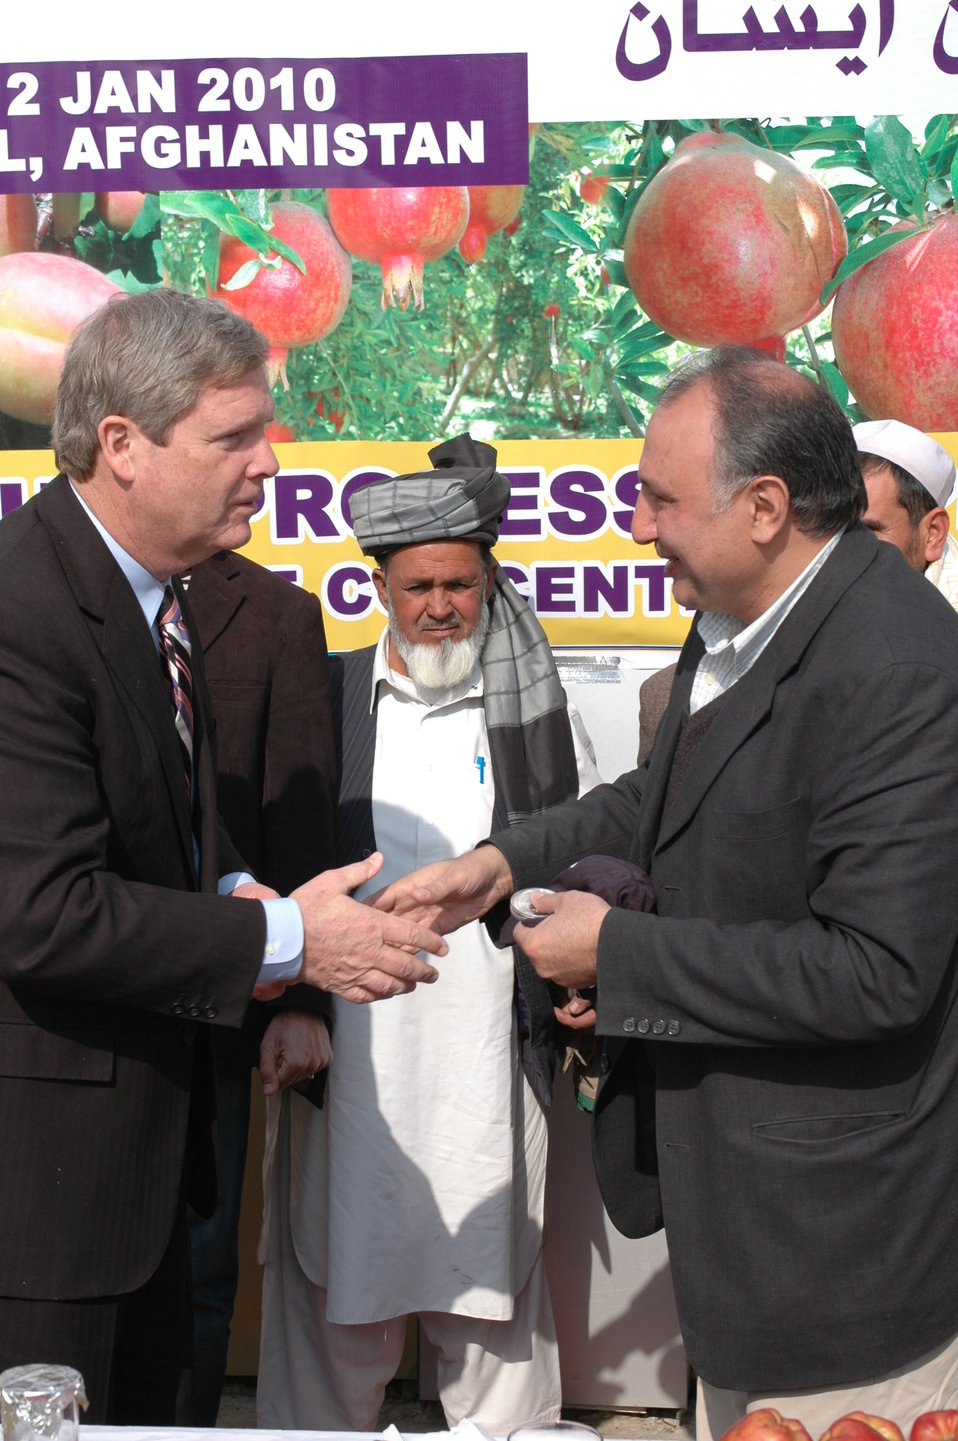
Secretary of Agriculture Vilsack